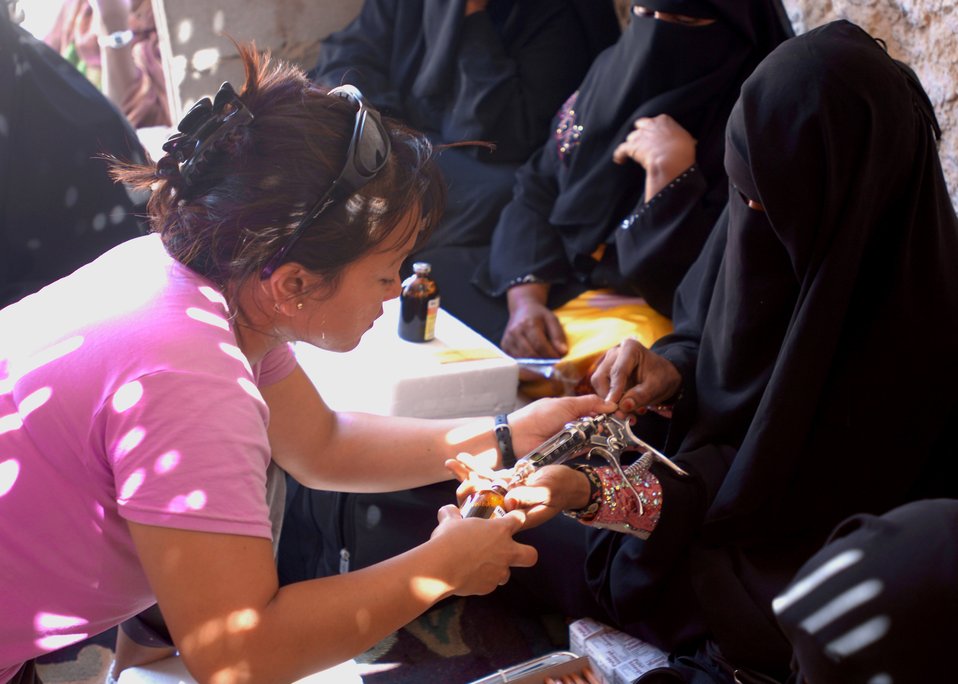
Veterinary project has big impact on small island

Air Force Maj. Pauline Lucas assists an animal health worker in using an auto injector during a veterinary civic action project on the island Socotra, Yemen. The objective of the project was to teach women on the island basic animal husbandry techniques. Those learned skills will be used to improve the country's overall livestock health. Combined Joint Task Force-Horn of Africa is a unit of United States Central Command. The organization's mission is to prevent conflict, promote regional stability and protect coalition interests in order to prevail against extremism. Major Lucas is a public health officer with CJTF-HOA.